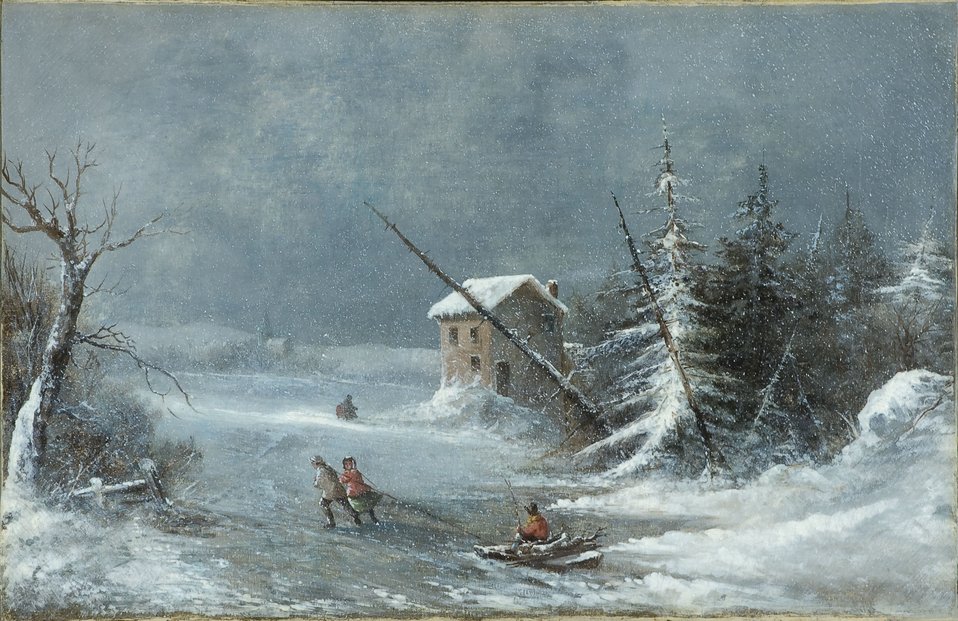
The Blizzard, oil on canvas painting by Cornelius Krieghoff, c. 1860,